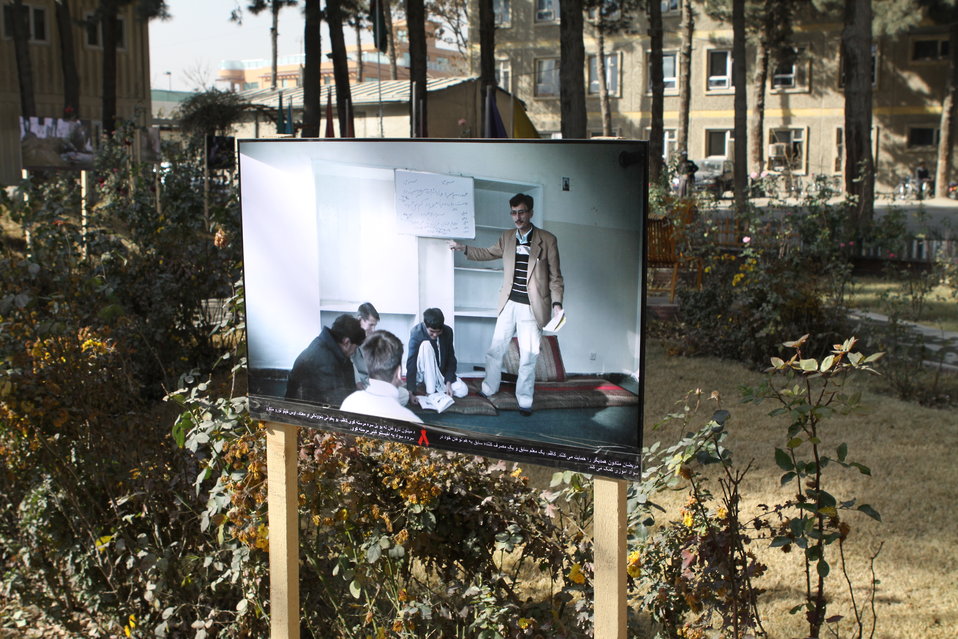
Community Health Workers Celebrated

Kabul, Afghanistan | December 5, 2010 — In support of the United Nations designated International Volunteer Day for Economic and Social Development, Afghanistan’s Ministry of Public Health celebrated its annual Community Health Worker Day today. Acting Minister of Public Health Dr. Suraya Dalil, USAID Senior Deputy Mission Director Robert Hellyer, other government officials, and international donors joined in recognizing the critical contribution of community health workers in Afghanistan and encouraging them to continue their voluntary support to their communities.
The event praised the contributions of the more than 22,000 volunteers throughout the country who deliver community level health-education, counseling, and services out of village health posts located in private homes. The Ministry of Public Health envisioned that community-based healthcare programs will actively encourage communities and families to adopt healthy lifestyles and behaviors, and provide families access to high quality and socially acceptable preventative medicine and life-saving services.
“We have 22,000 community health workers in Afghanistan that are able to implement the basic and standard medicines. They all have been trained through a job description,” said Minister Dalil. Addressing the health workers, she added, “I am proud and feel powerful that I have people like you.”
USAID-funded health projects collaborate closely with the Ministry of Public Health to improve the health and nutritional status of Afghans, provide quality primary healthcare, and promote healthy behaviors at the community and household-levels. USAID supported the training of more than 9,000 of the volunteer community health workers currently working in Afghanistan.
“On behalf of the American people, I congratulate the Community Health Workers for their diligence to gain the skills and knowledge necessary to serve their communities in this important role,” said USAID Senior Deputy Mission Director Hellyer. “USAID strongly supports community based health care and believes that quality community-based health services are essential to reaching Afghanistan’s Millennium Development Goals.”
To support the Basic Package of Health Services, USAID assisted in developing the community health worker training manual, helped train community health worker supervisors and master-trainers, facilitated in-service training, and produced and developed reporting tools, job aids, and education materials.